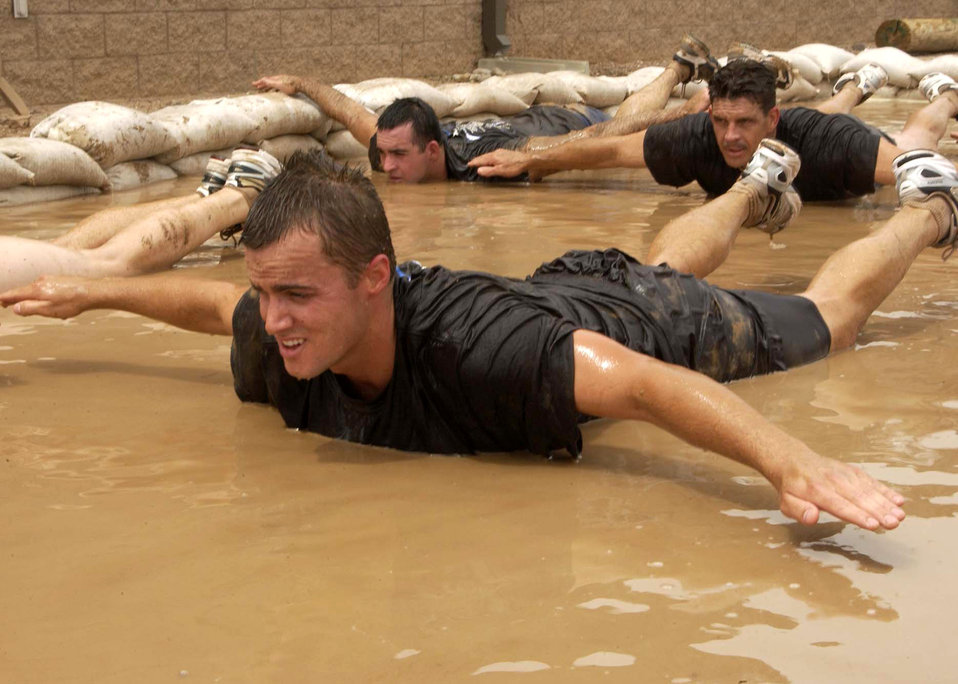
PJ selection process

Alan Brumfield simulates a freefall in a mud pit during the 306th Rescue Squadron pararescue screening Friday, April 21, 2006, at Davis-Monthan Air Force Base, Ariz. Military and civilian applicants must pass a timed 3-mile run, 1,500-meter swim, calisthenics and other tasks before proceeding to the 10-week indoctrination course at Lackland AFB, Texas.